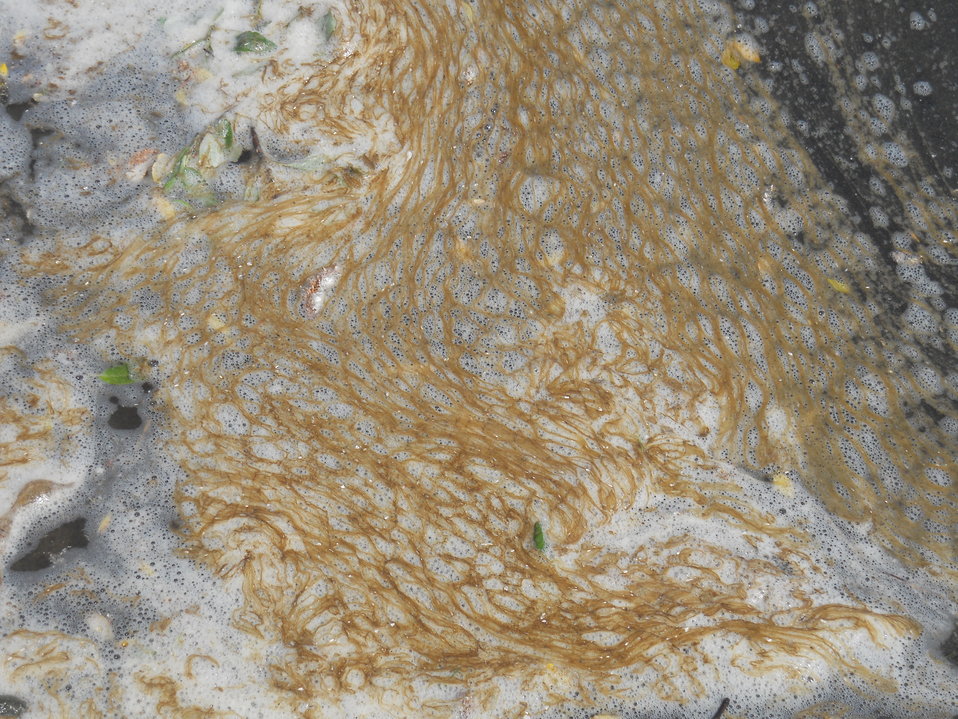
Sea Foam

Credit: USFWS
Photo taken by a Salmon Camp participant during a nature photography activity.

Source and Contact: Kodiak National Wildlife Refuge